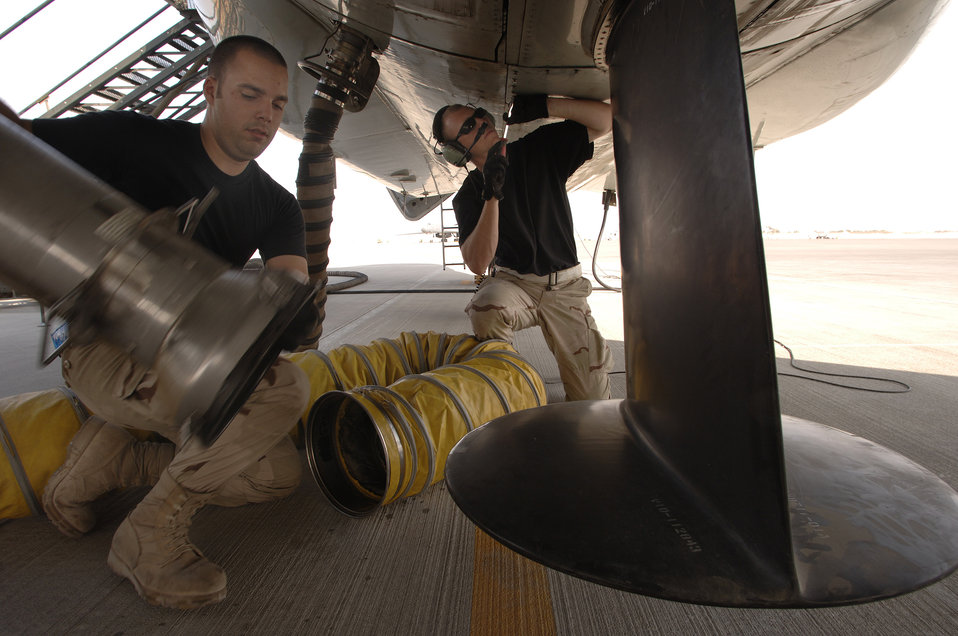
Maintainers turn Rivet Joint

Senior Airman Matthew Campbell and Airman 1st Class Jonathan Campana remove one of many air conditioning hoses on an RC-135 Rivet Joint reconnaissance aircraft prior to its departure for a mission over southwest Asia. The hoses help maintain cool temperatures for the extensive inventory of electronics aboard the plane during its lengthy start up process. Both crew chiefs are deployed from the 55th Aircraft Maintenance Squadron from Offutt Air Force Base, Neb.